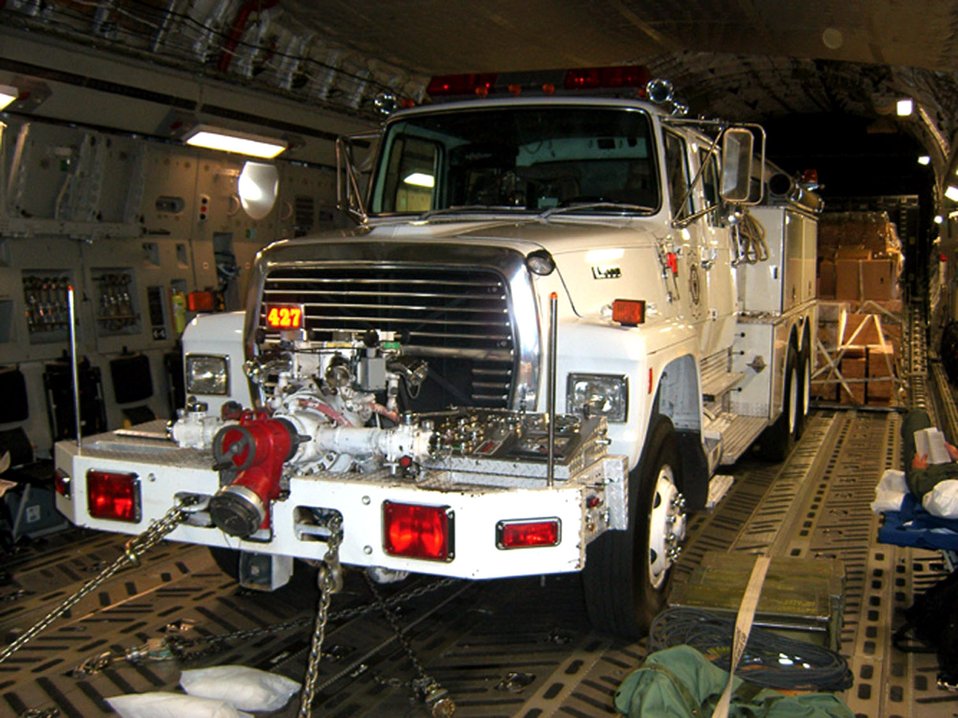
Airmen help airlift donated goods into Iraq, Nicaragua

A donated fire truck picked up in Klamath Falls, Ore., is loaded onto a C-17 Globemaster III and on its way to Nicaragua Oct. 14 by Airmen from McChord Air Force Base, Wash. The Air Force Reserve aircrew from the 446th Airlift Wing at McChord AFB flew the fire truck and 100 pediatric wheelchairs picked up in Sioux Falls, Iowa, on a Denton Program mission.